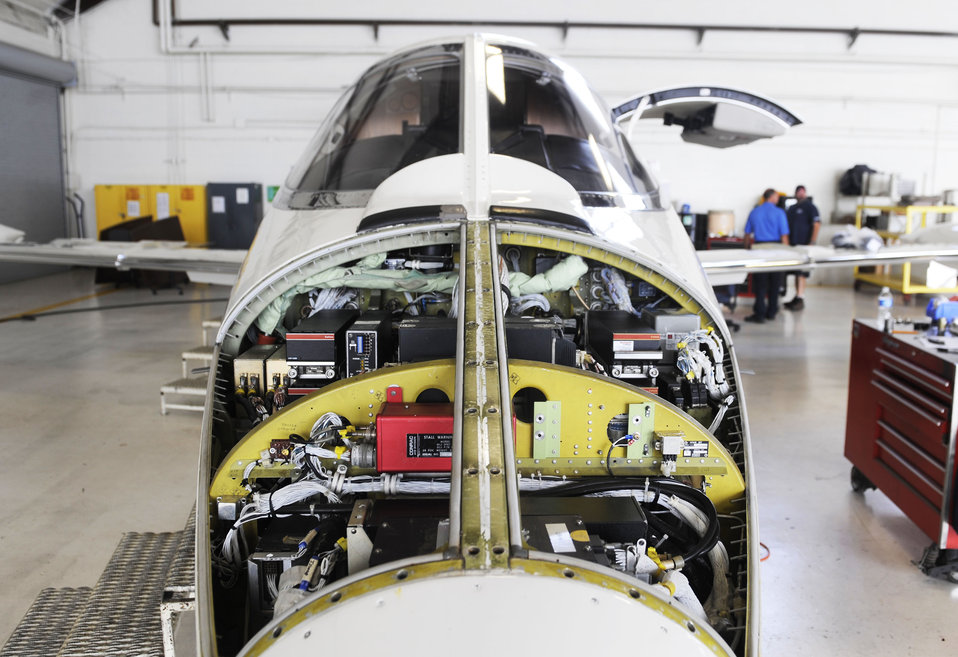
C-21 phase inspection

A C-21 is worked on during a phase inspection Sept. 16, 2010, at Scott Air Force Base, Ill..